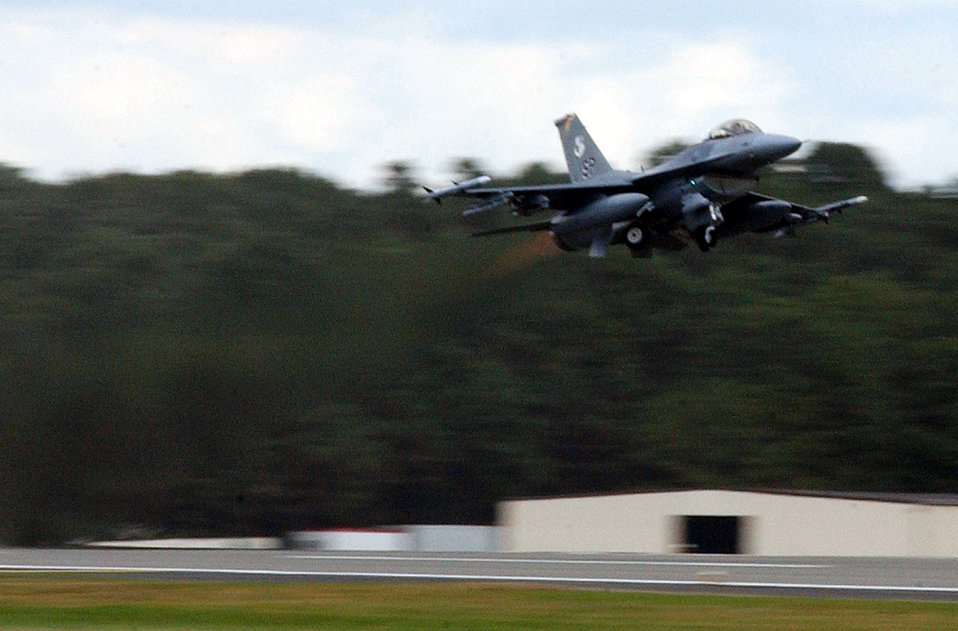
Remodeled runway

SPANGDAHLEM AIR BASE, Germany -- An F-16 Fighting Falcon assigned here makes the first takeoff from the base's remodeled runway Sept. 2. The runway closed in March for construction as part of the Rhein-Main Transition Program. The $158 million project took more than two years of planning before construction began.